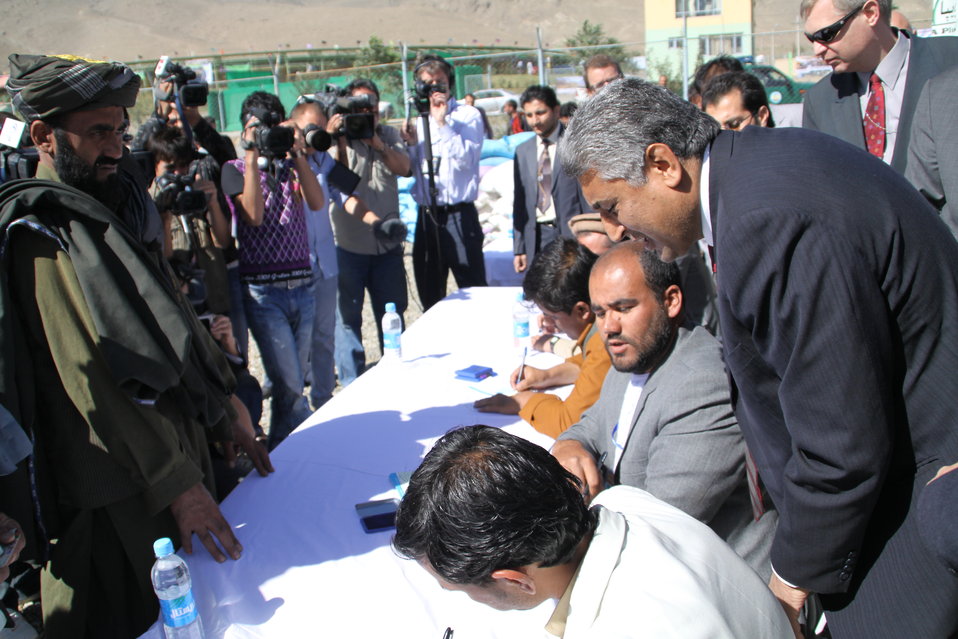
AVIPA Plus Wheat Seed Distribution 101005

US Ambassador Karl Eikenberry and USAID Acting Mission Director Kevin Brownawell joined the Minister of Agriculture, Irrigation and Livestock, H.E. Minister Mohammed Rahimi in signing a Memorandum of Understanding and distributing vouchers to area farmers for wheat and fertilizer.

US Ambassador Karl Eikenberry and USAID Acting Mission Director Kevin Brownawell joined the Minister of Agriculture, Irrigation and Livestock, H.E. Minister Mohammed Rahimi in signing a Memorandum of Understanding and distributing vouchers to area farmers for wheat and fertilizer.